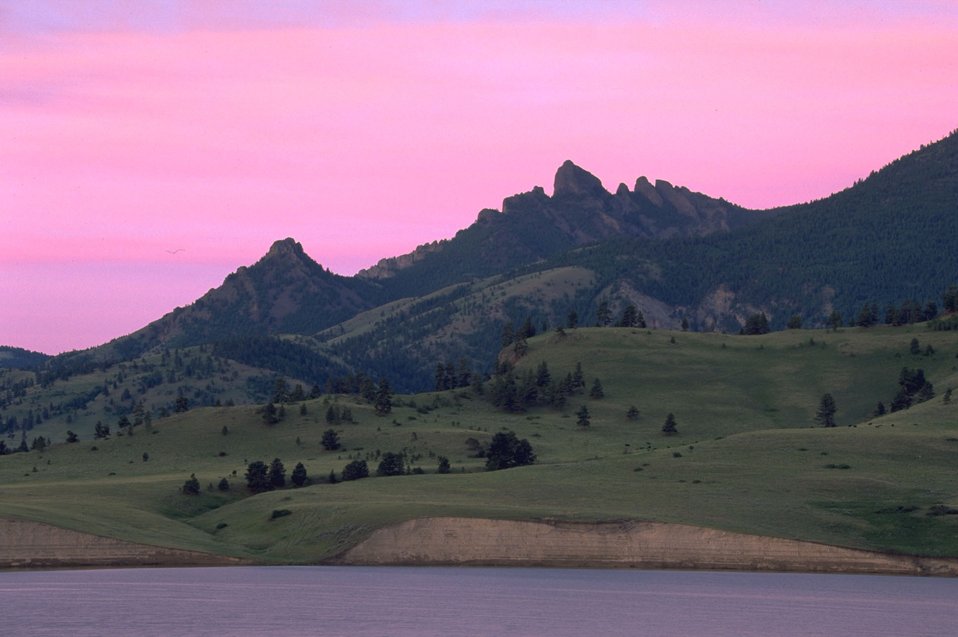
Holter Lake view of Sleeping Giant Wilderness Study Area